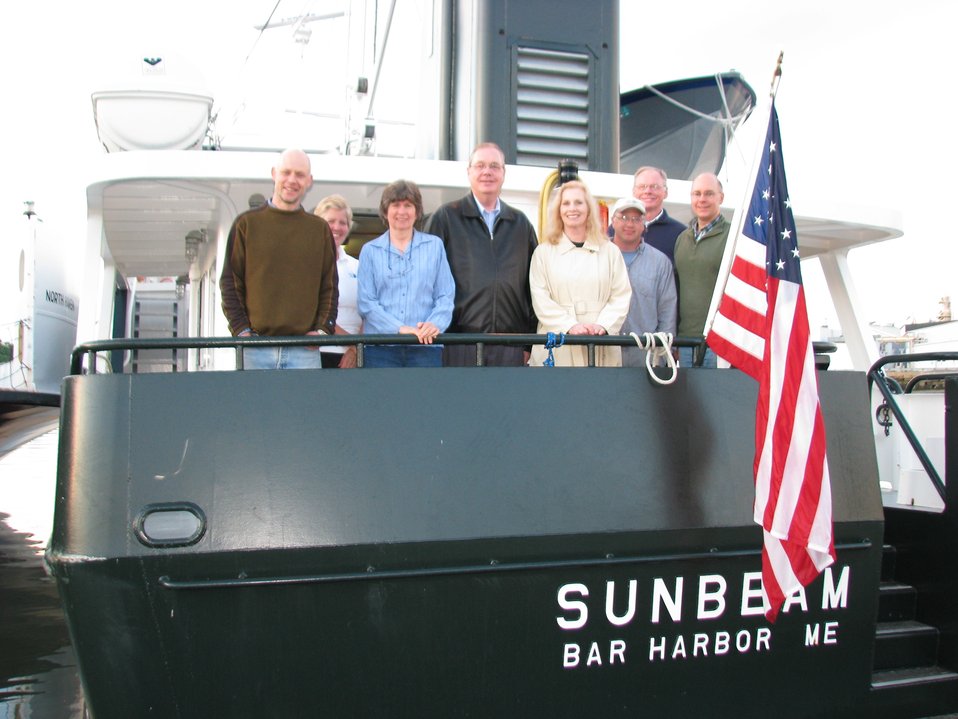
Sunbeam-06202012

U.S. Department of Agriculture (USDA) Rural Development (RD) Under Secretary Dallas Tonsager (center) and USDA RD Virginia State Director Manuel (Right of the Under-Secretary) stand on the deck of the Sunbeam with its staff and crew in Rockland Harbor, ME. The 75-foot boat visits four island communities twice a month, providing healthcare services via telemedicine technology onboard, which is linked to mainland hospitals.